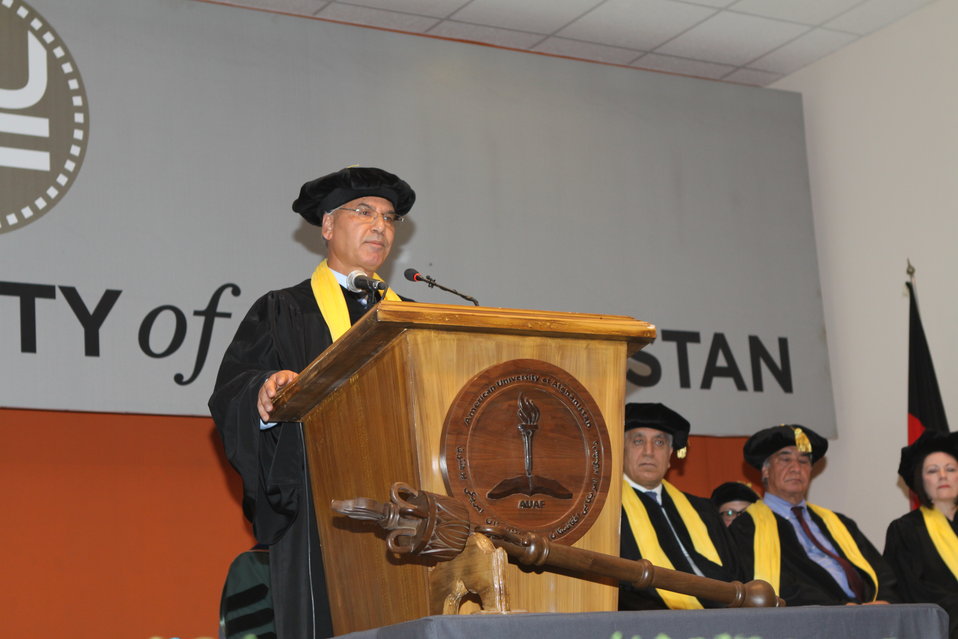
100526 AUAF Graduation 147